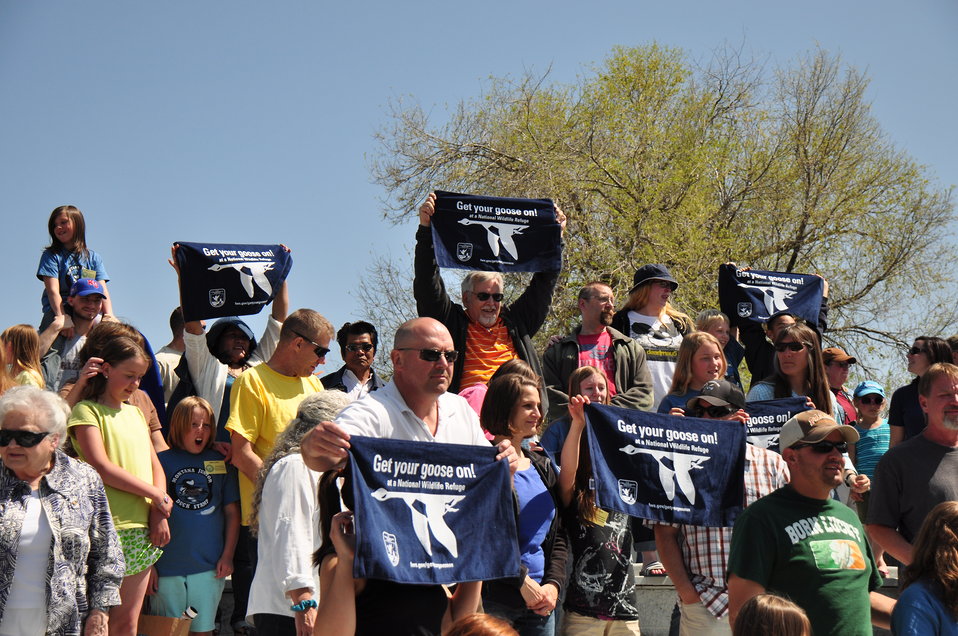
Get Your Goose On!!!

More than 100 people attended the 2012 Montana Junior Duck Stamps award ceremony. The folks pictured here posed with their towels as a videographer captured footage of them screaming, in unison, 'Get Your Goose On!'